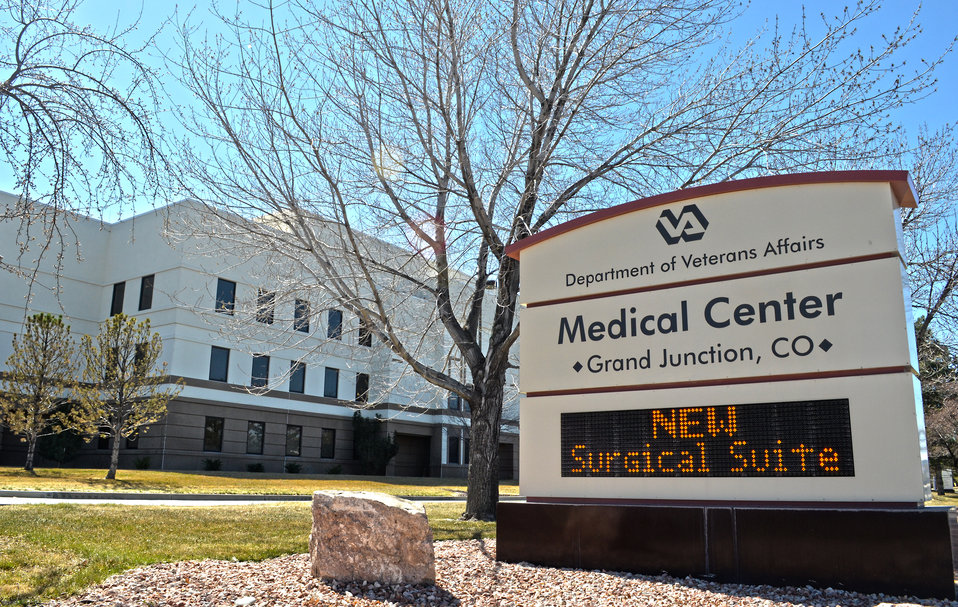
Sacramento District completes $13 million addition at VA medical facility

The new surgical floor addition is highlighted on the marquee of the Grand Junction Department of Veterans Affairs Medical Center in Grand Junction, Colo., March 23, 2012. The U.S. Army Corps of Engineers Sacramento District oversaw construction of the $13 million addition. (U.S. Army photo illustration by Carlos J. Lazo/Released)